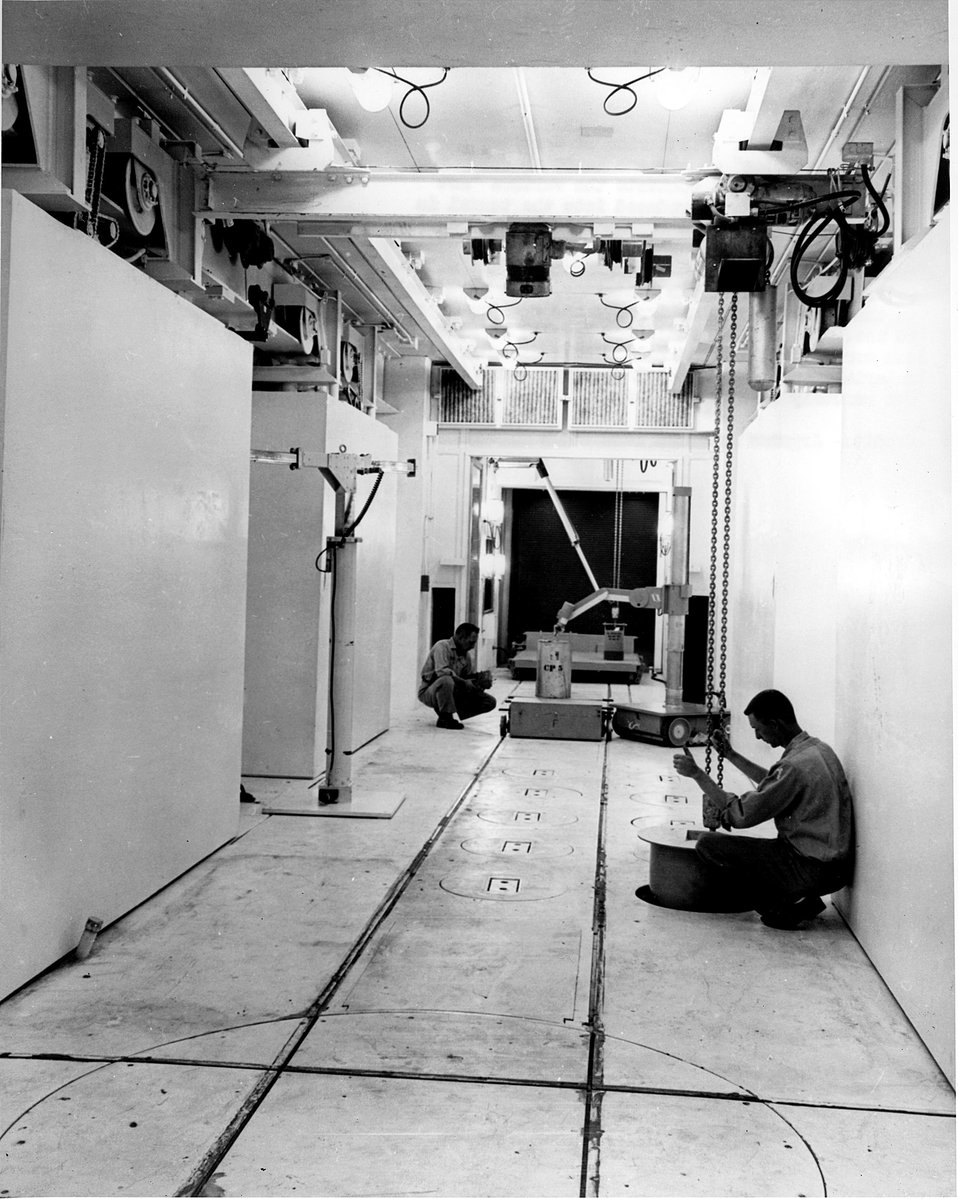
Interior of the Chemistry 'Hot Laboratories' at Argonne
c.1968